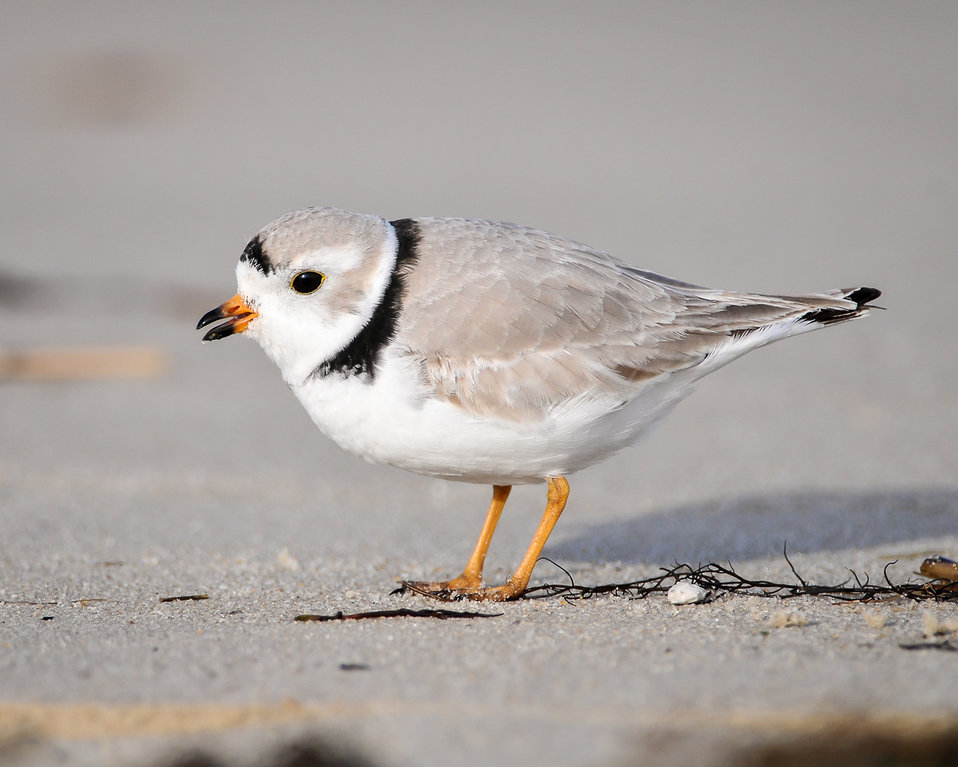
Piping plover photographed at Cape May National Wildlife Refuge.